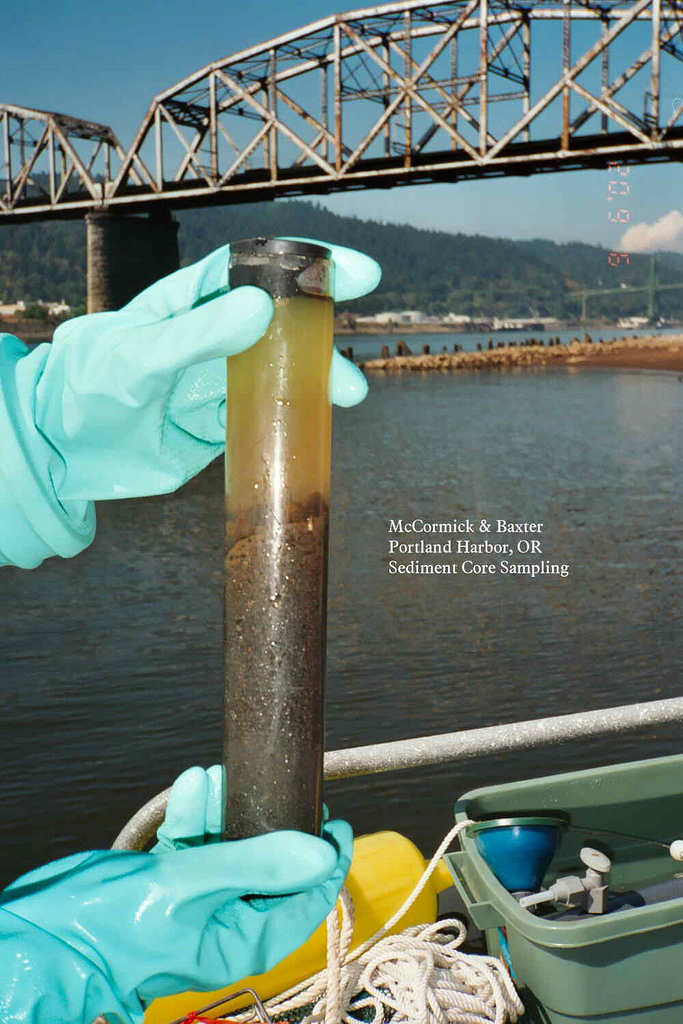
May 11, 2012 Sediment core from the McCormick and Baxter Superfund Site

EPA Region 10 Diver Bruce Duncan holds a sediment core from the McCormick and Baxter Superfund Site on the east bank of the Willamette River in Portland, Oregon.

EPA divers often help characterize bottom sediments for later cleanup in support of the Superfund program.

McCormick and Baxter Superfund Site

EPA Region 10 Diving